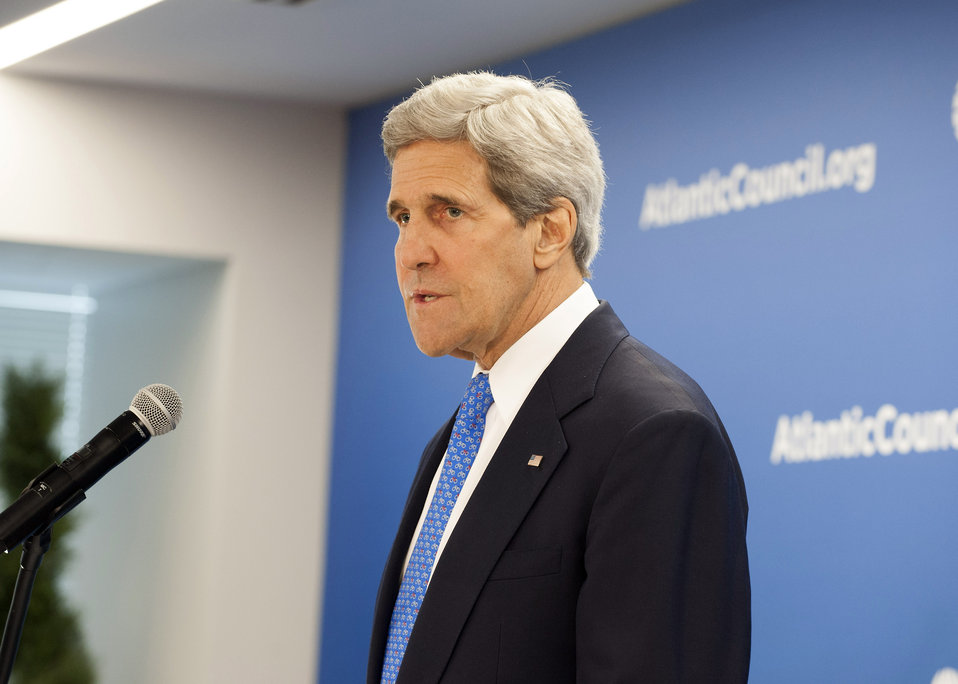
Secretary Kerry Delivers Remarks at the Atlantic Council's Tribute to NATO and the EU

U.S. Secretary of State John Kerry delivers remarks at the Atlantic Council's tribute to NATO and the EU, at the Atlantic Council in Washington, D.C., on April 29, 2014.